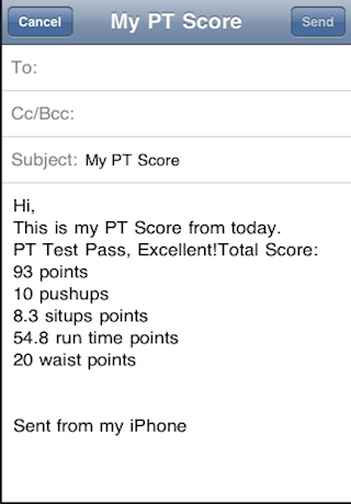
Airman develops PT calculator app

A screen shot of AF Tracker, an application available through iTunes that allows Airmen to calculate their fitness test scores on their smart phone or mp3 player and e-mail the score to anyone from the application. Senior Airman Julio Medina, a security forces member with the 6th Space Warning Squadron, created the application.